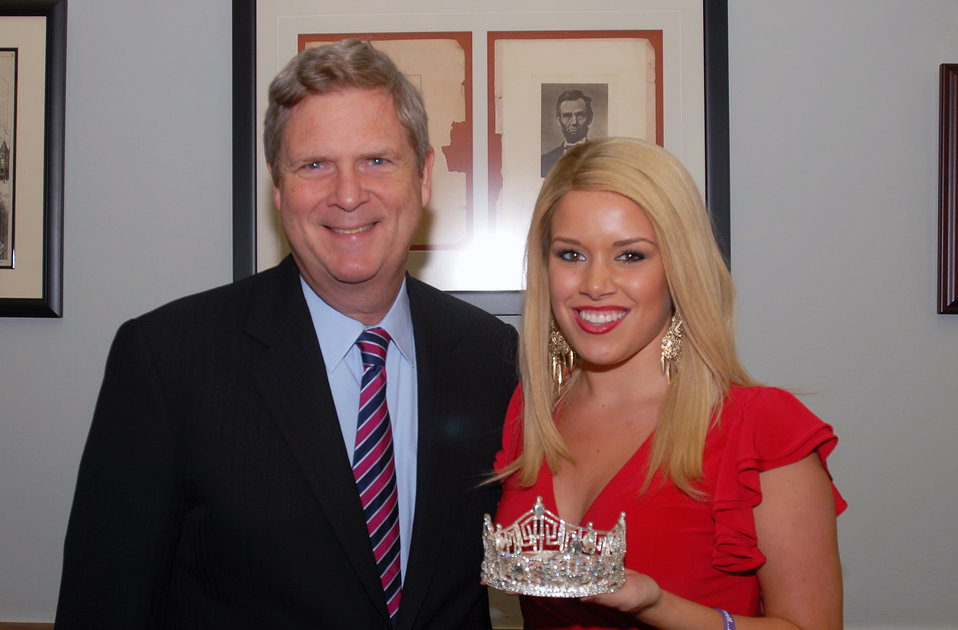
Agriculture Secretary Tom Vilsack met Miss America 2011 Teresa Scanlan (Nebraska) at the U. S. Department of Agriculture in Washington, DC, on Wednesday, June 15, 2011.